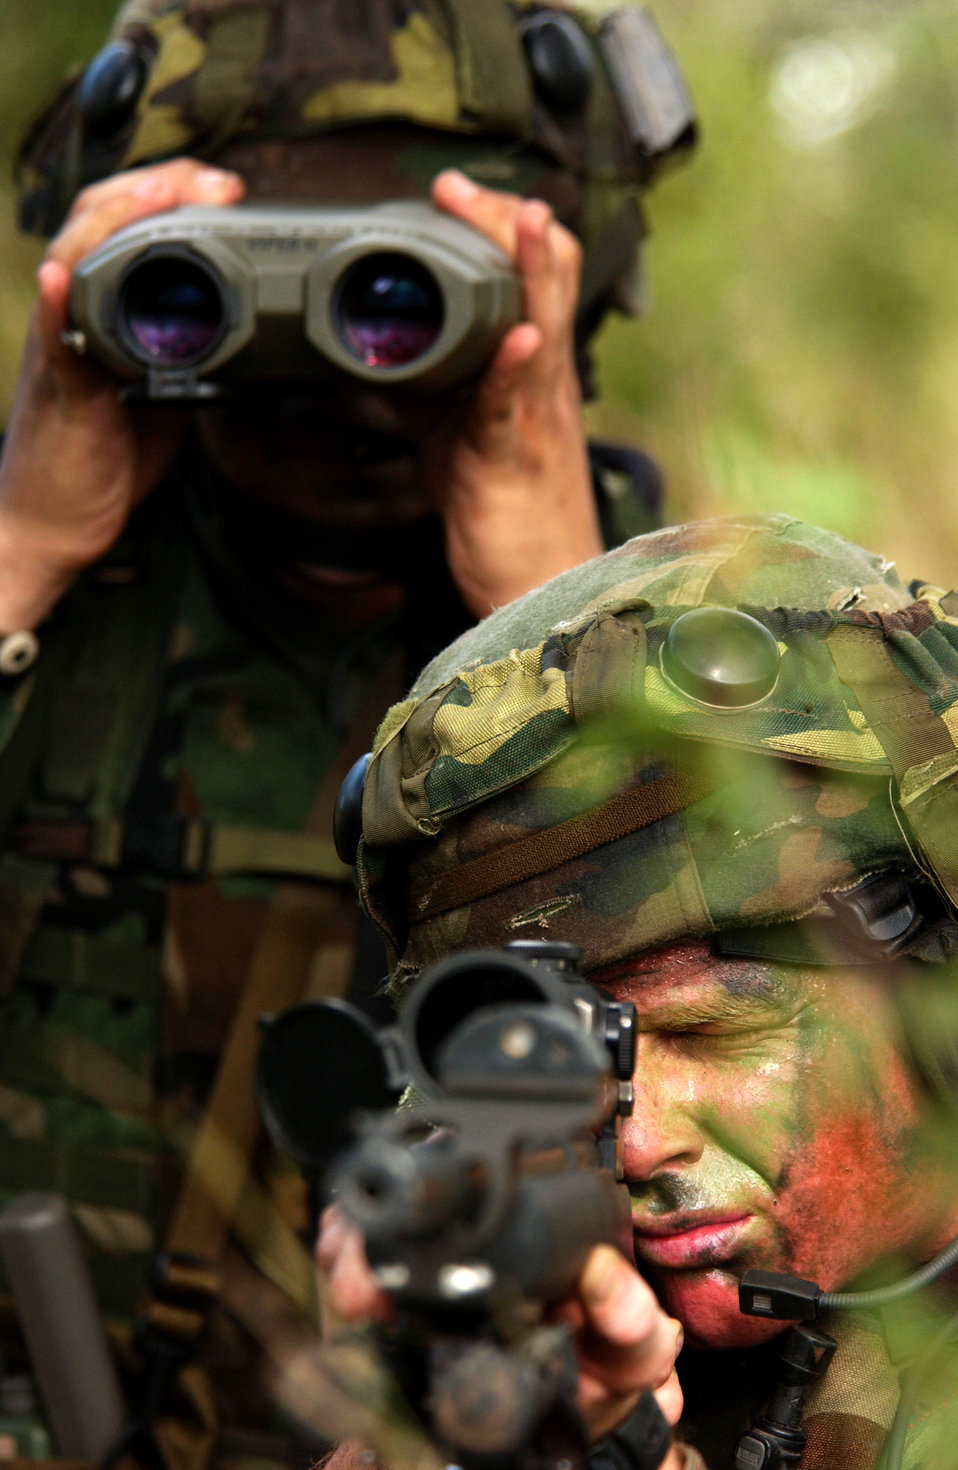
A watchful eye

CAMP BULLIS, Texas -- Airman 1st Class Jason Johnston and Senior Airman Adam Dermish provide watch for their fire team here Oct. 27 while competing in Defender Challenge 2004. Defender Challenge, being held at Lackland Air Force Base, Texas, is a security forces competition pitting competitors from major commands against one another over a series of events. Both Airmen are assigned to the 48th Security Forces Squadron at Royal Air Force Lakenheath, England.